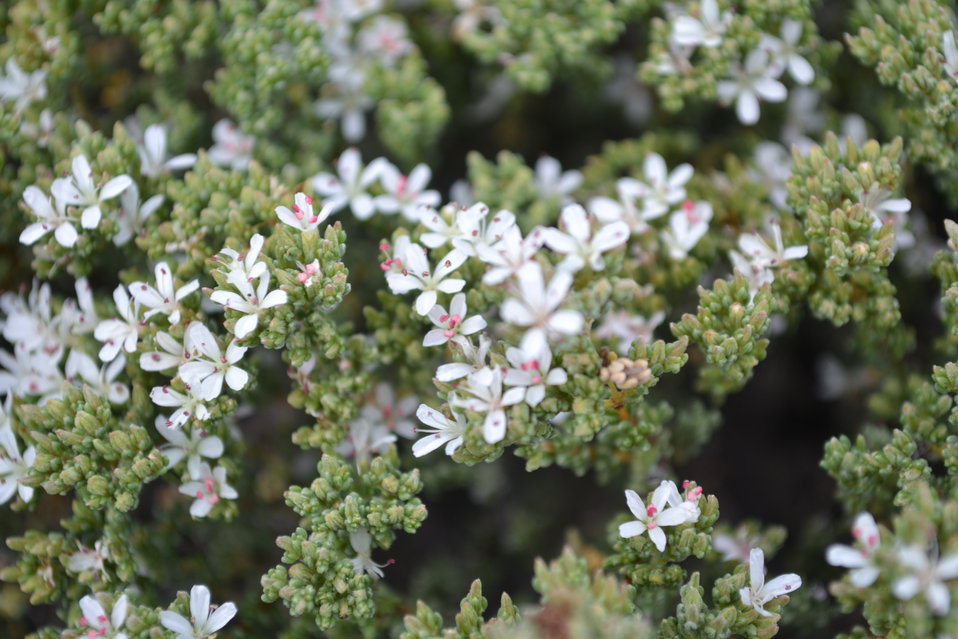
Palmer's Frankenia (Frankenia palmerii) closeup

Delicate pink and white flowers bloom during April 2011 on the rare plant, during the spring of 2011